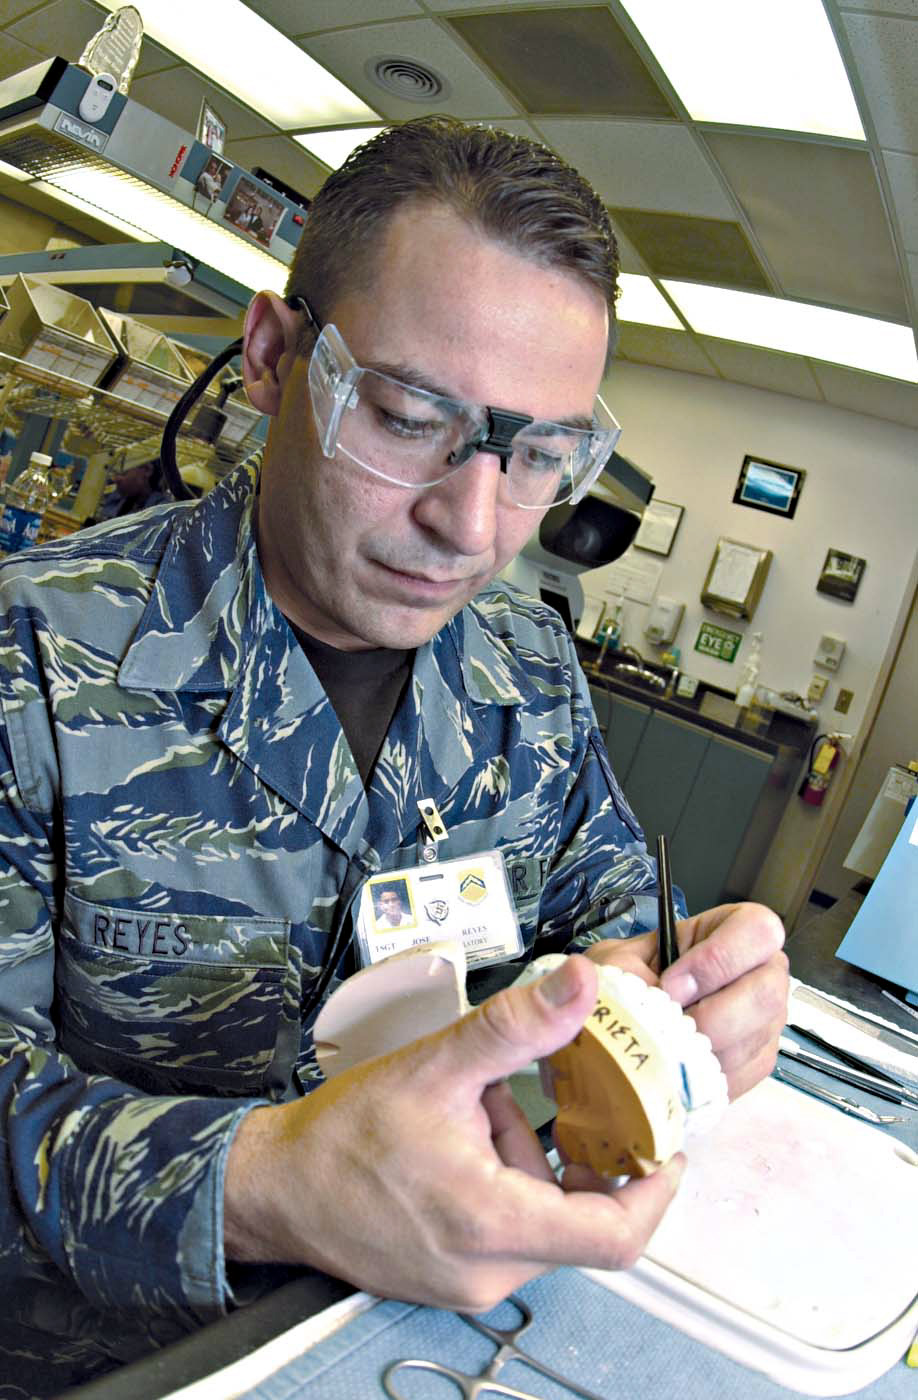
Grin and wear it

LUKE AIR FORCE BASE, Ariz. -- Tech. Sgt. Jose Reyes makes porcelain teeth here June 2. He is one of about 100 Airmen here wear-testing the Air Force utility uniform prototype. Sergeant Reyes is a dental technician assigned to the 56th Medical Group.